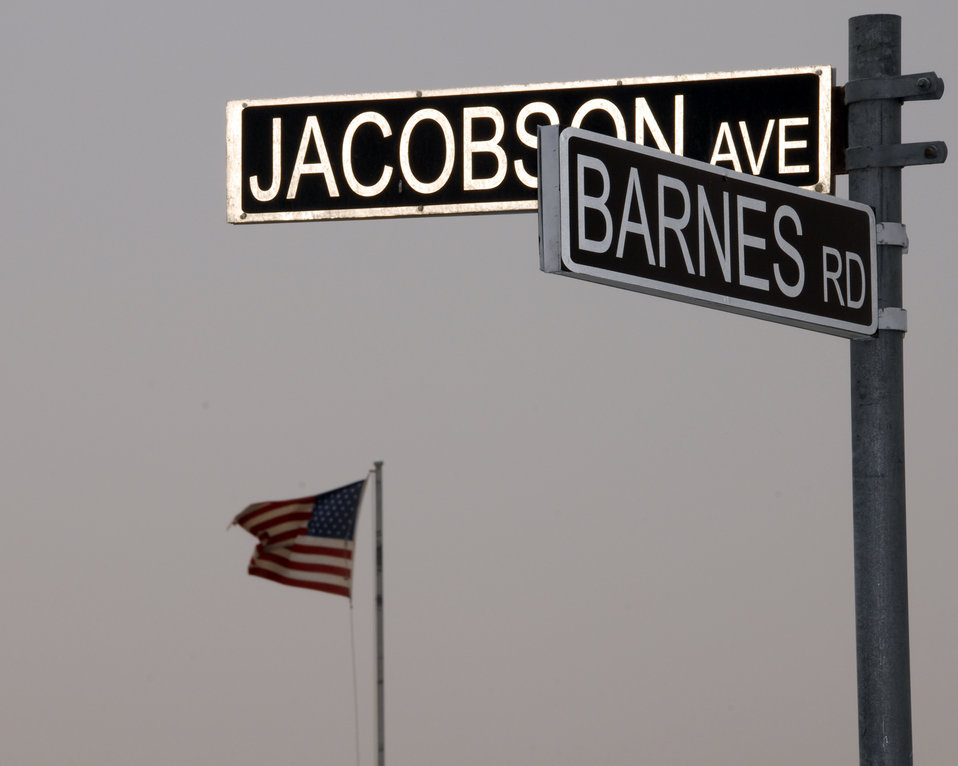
In His Honor: Street named for Airmen killed in action

The U.S. flag waves proudly in the background behind the new Barnes Road and Jacobson Avenue intersection sign June 10 in Southwest Asia. The intersection is named in honor of Airman 1st Class Eric Barnes, who died June 10, 2007, as a result of an improvised explosive device attack on an Air Force convoy about 100 miles south of Baghdad, Iraq, and Airman 1st Class Elizabeth Jacobson, who died Sept. 28, 2005 while on a convoy near Camp Bucca, Iraq, when her vehicle was hit by an IED. She was the first female Airman killed in the line of duty in Operation Iraqi Freedom.